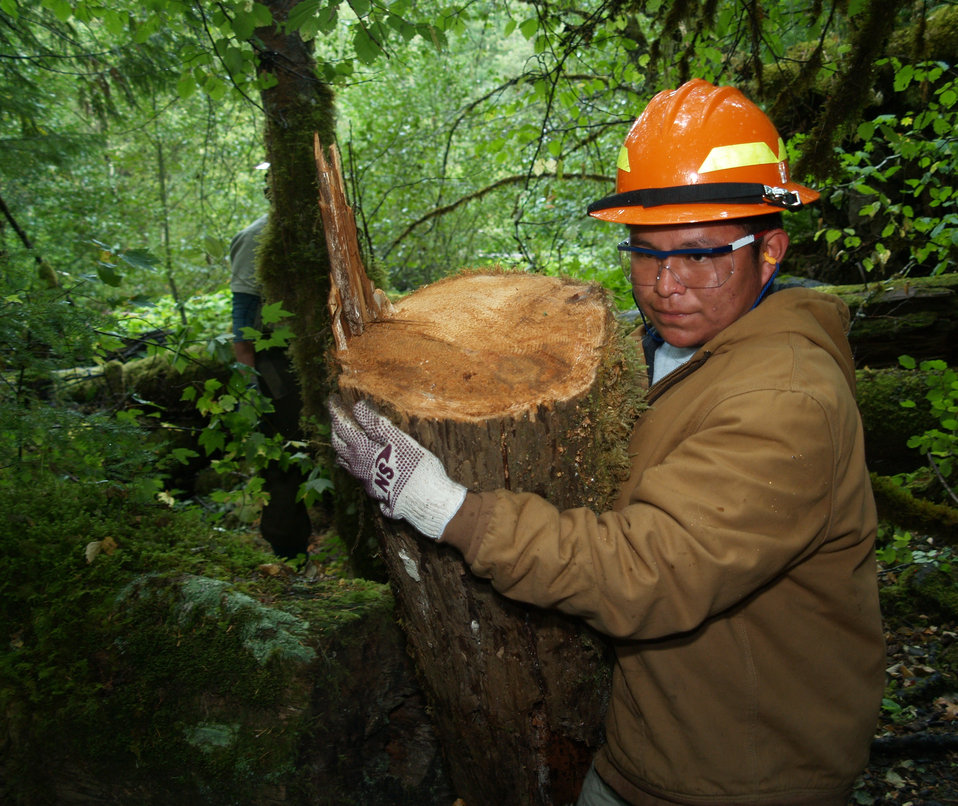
September 29, 2009. Estacada, OR. Timber Lake Job Corps Center student Marvin Nez carries a section of fallen log to be placed in the water during a streamside restoration project on the Clackamas River. The project enhances the spawning areas of native salmon on the river.